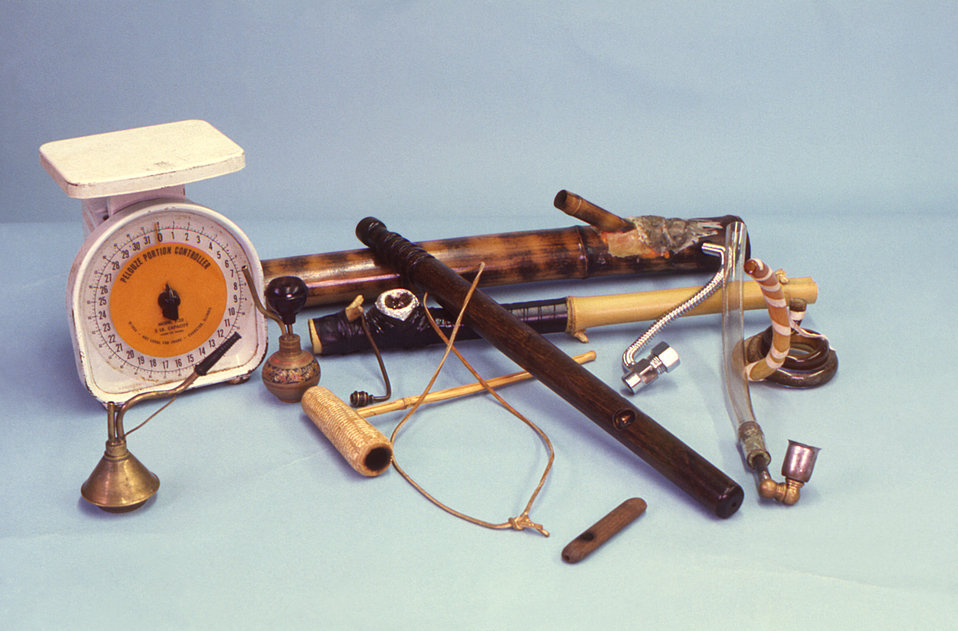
This image depicts a still life composed of a number of items representing homemade devices commonly found in the marijuana smoker's repertoire of smoking implements, as well as a scale, which was used to measure out individual doses that would be resold on the street.